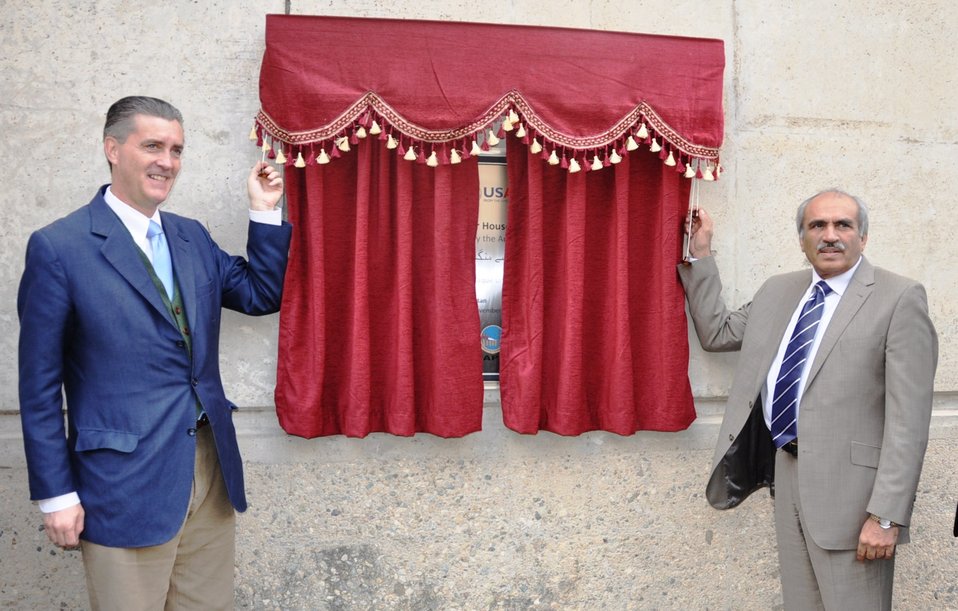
U.S. Ambassador Richard Olson and Wapda Chairman Raghib Shah unveiling the plaque